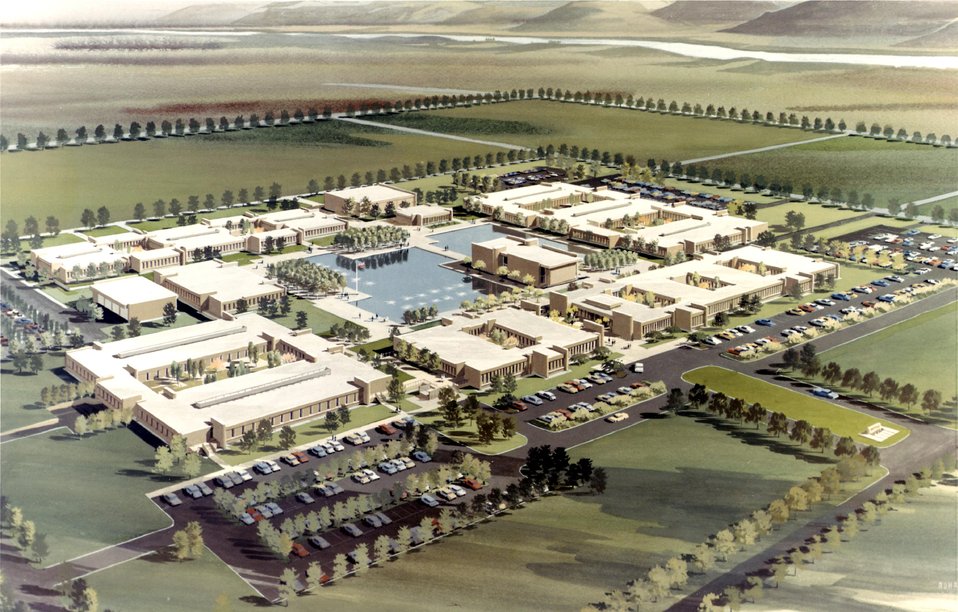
Battelle Memorial Inst. Lab, as planned, Hanford. c. undated